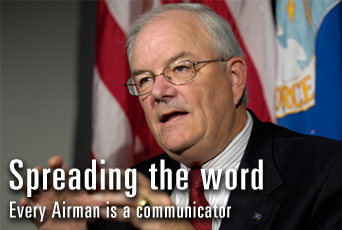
Every Airman is a communicator

Secretary of the Air Force Michael W. Wynne